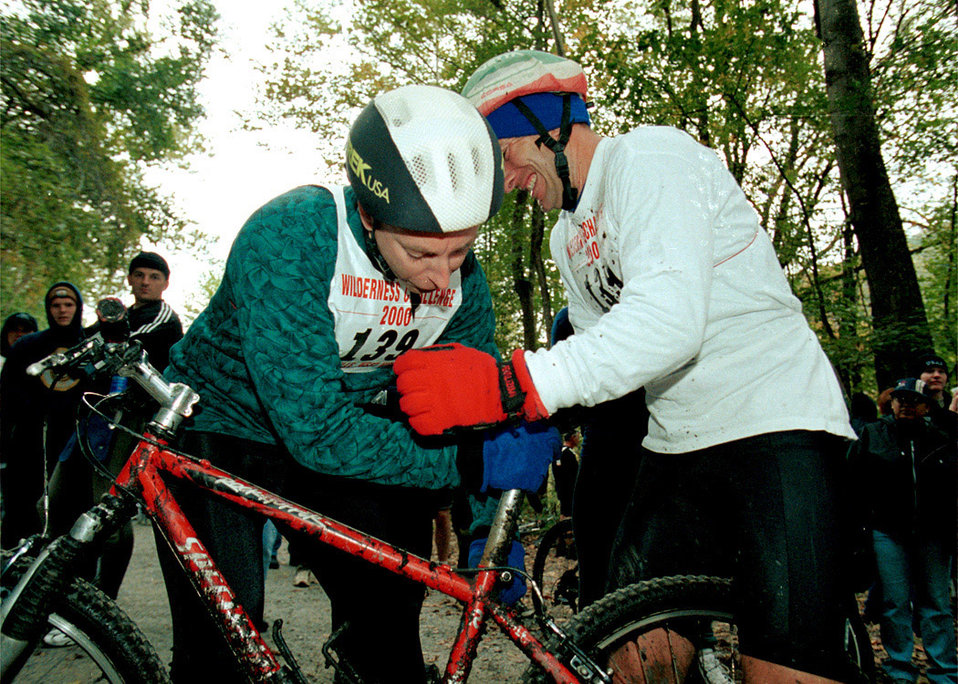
Wilderness Challenge

FAYETTEVILLE, W. Va. -- Maj. Terrence Leary (left) helps Maj. Russell Fellers adjust the seat before taking off on the next 10-mile leg of a 40-mile mountain bike relay during the all-service Wilderness Challenge 2000. Leary and Fellers were members of the Air Force Pentagon team participating in the competition.